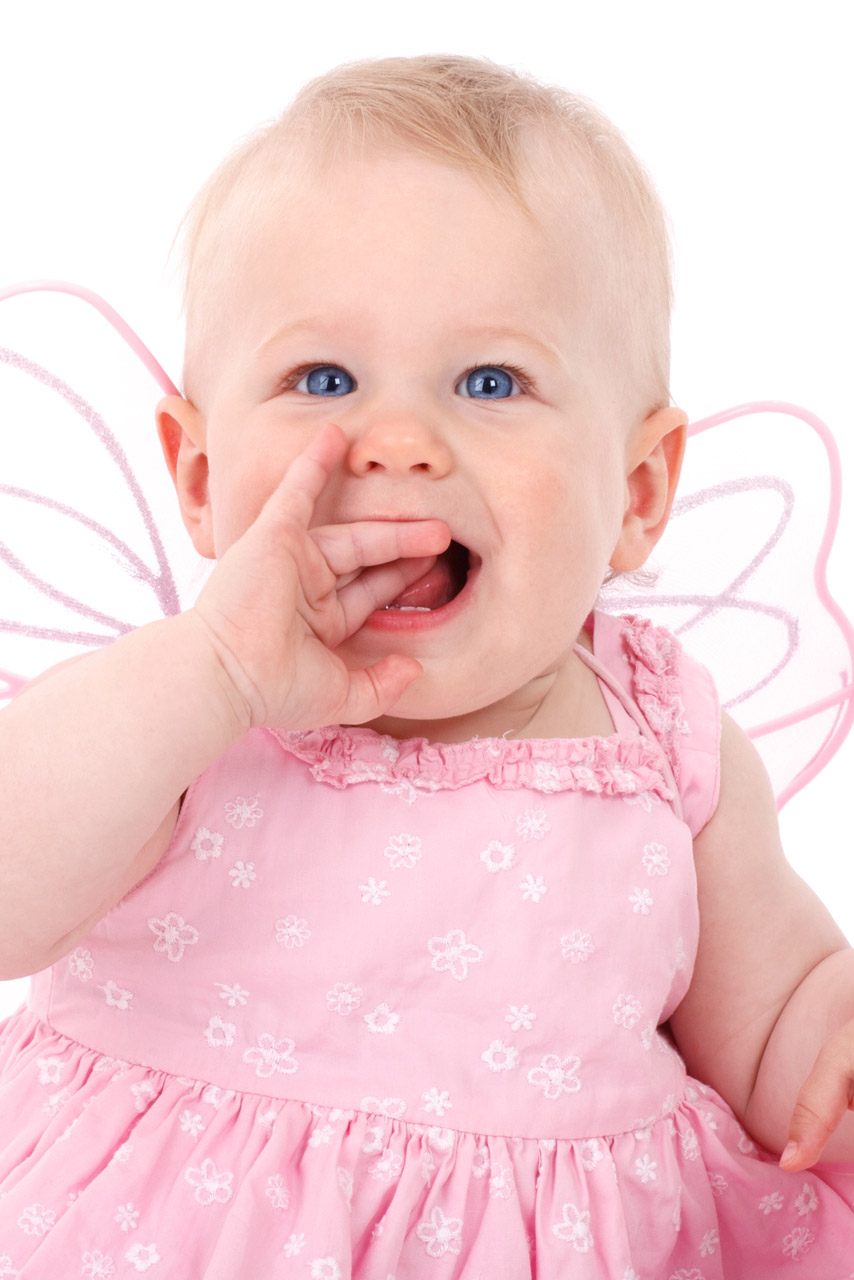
Fairy baby girl

Excited baby girl dressed as a fairy isolated on white background.